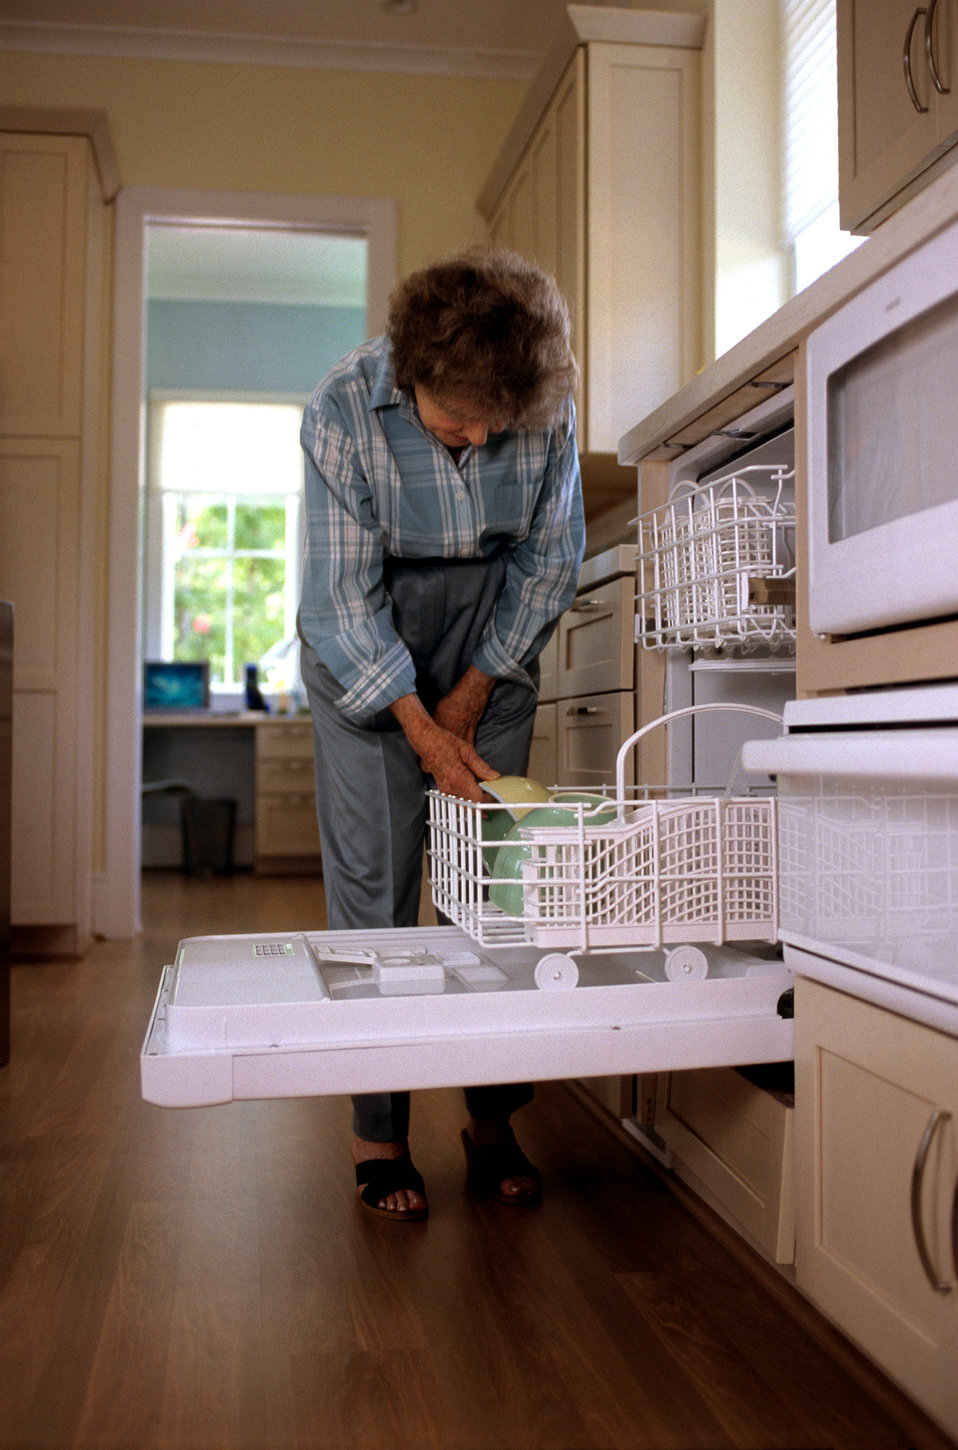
This 2000 image depicted a universally-designed, raised dishwasher that was being loaded by an elderly woman, and though she was bent over, seemed to be filling the appliance in an effortless manner. Dishwashers installed this way raise the storage area up within reach of people who use wheelchairs, as well as those such as this woman, who might have difficulty in bending down to the level of conventionally installed appliances.